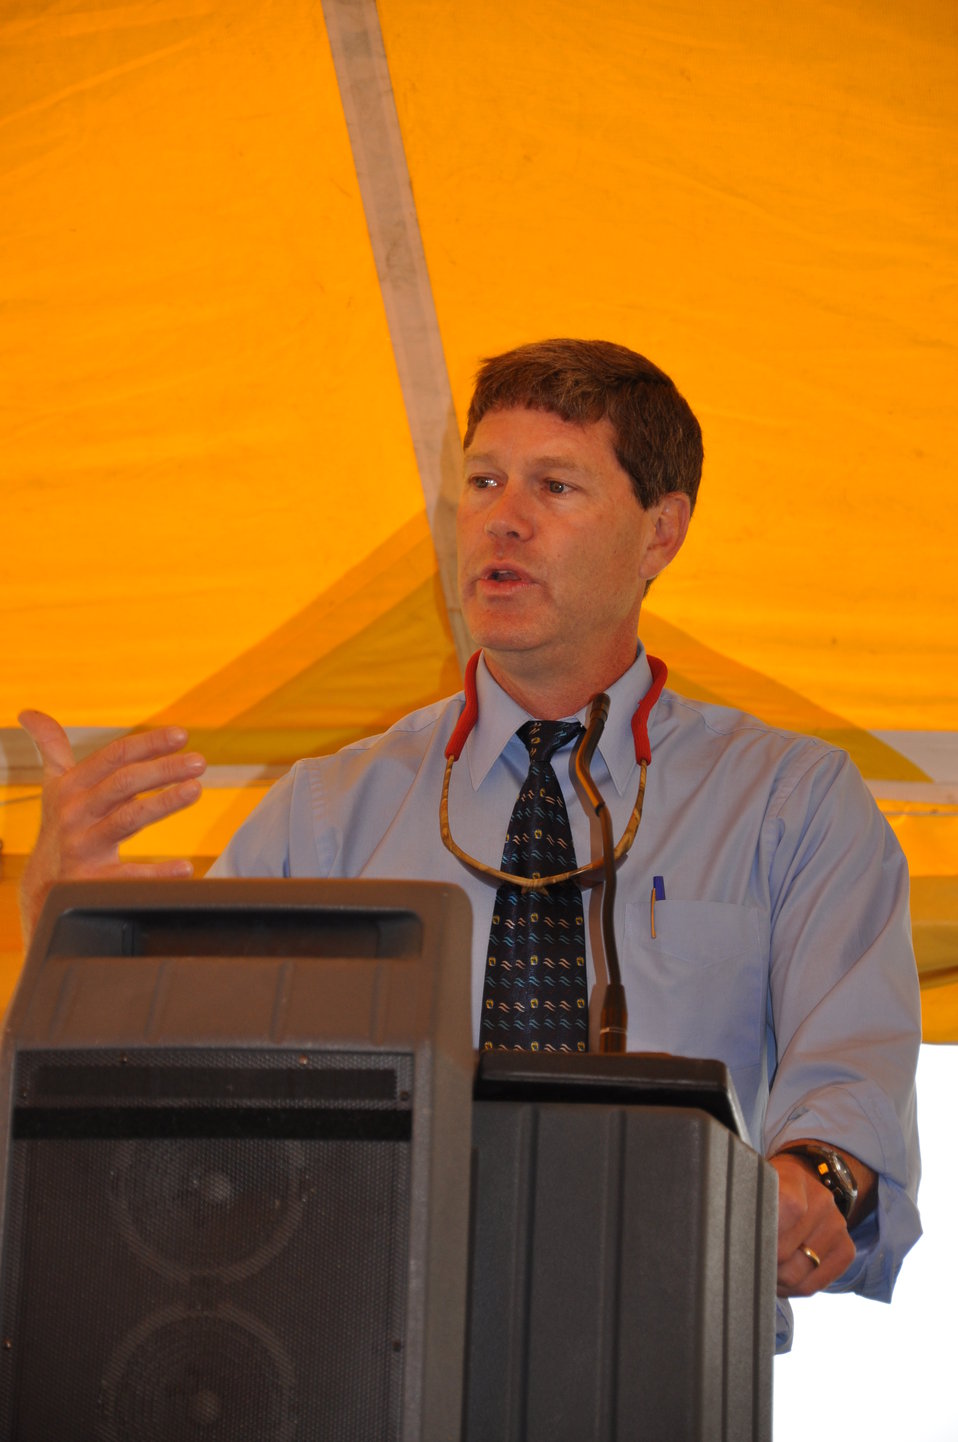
Congressman Ron Kind addresses the crowd at the grand opening ceremony.